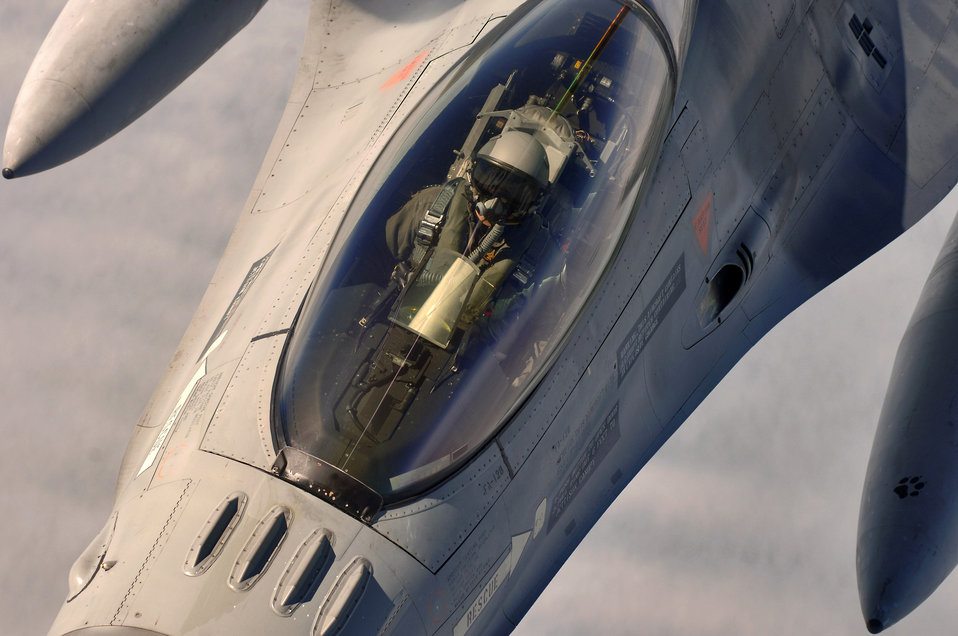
Exercise Wycombe Warrior

A Belgian F-16 Fighting Falcon flies into contact position below and behind a KC-135 Stratotanker from Royal Air Force Mildenhall, England, over the North Sea on July 25. The Belgians were participating with other NATO countries in exercise Wycombe Warrior.